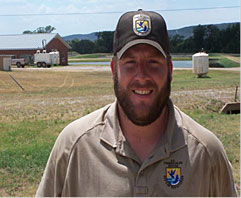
Robert Vorous spent two years in Iraq in support of Operation Iraqi Freedom where he served as personal security for the Commander of 3-8 Calvary. After returning from Iraq, Vorous was sent to Fort Irwin, California, at the Fort Irwin National Training Center, to prepare new soldiers for combat readiness. Vorous was again deployed overseas, this time to Afghanistan, to aid in Operation Enduring Freedom for 15 months. During his tours, Vorous earned several combat awards and metals, including the Combat Action Badge. After being honorably discharged, Vorous was offered a position in Burnet, Texas, as a Maintenance Worker at the Inks Dam National Fish Hatchery. He is also an integral part of the Regional Distribution Unit helping stock fish within the Southwest Region.